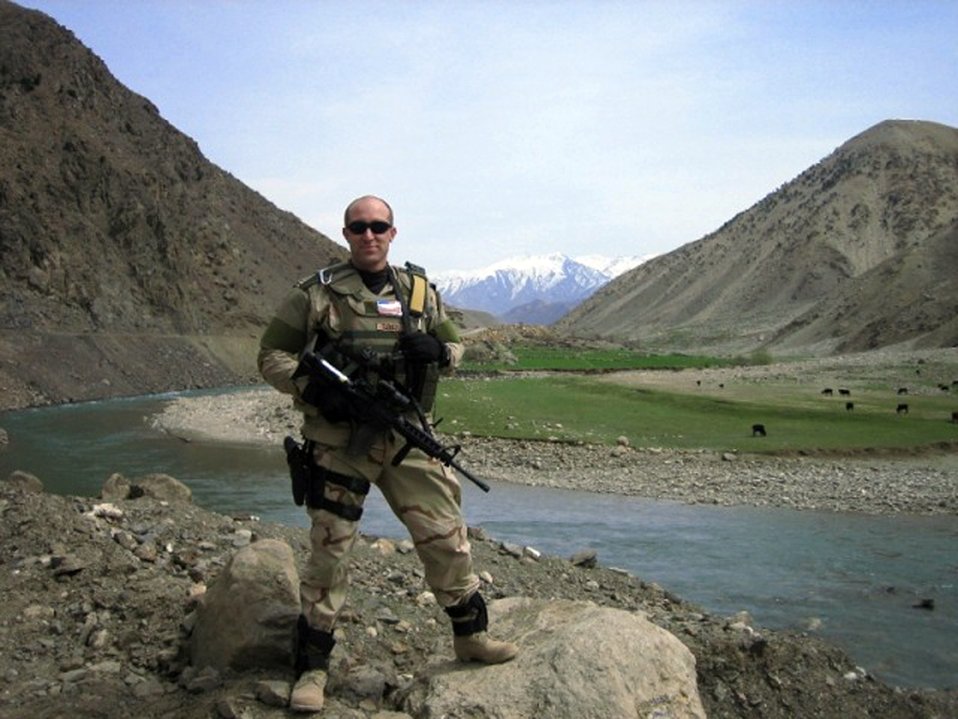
Air Force develops friend vs. foe identification system

1st Lt. TJ Turner is shown wearing Target Recognition Operator Notification I on his left shoulder in January near Bagram Air Base, Afghanistan. Air Force Research Laboratory officials partnered with the civilian industry to develop the identification system to save lives and enhance combat effectiveness. Lieutenant Turner is a member of the 455th Expeditionary Mission Support Group.